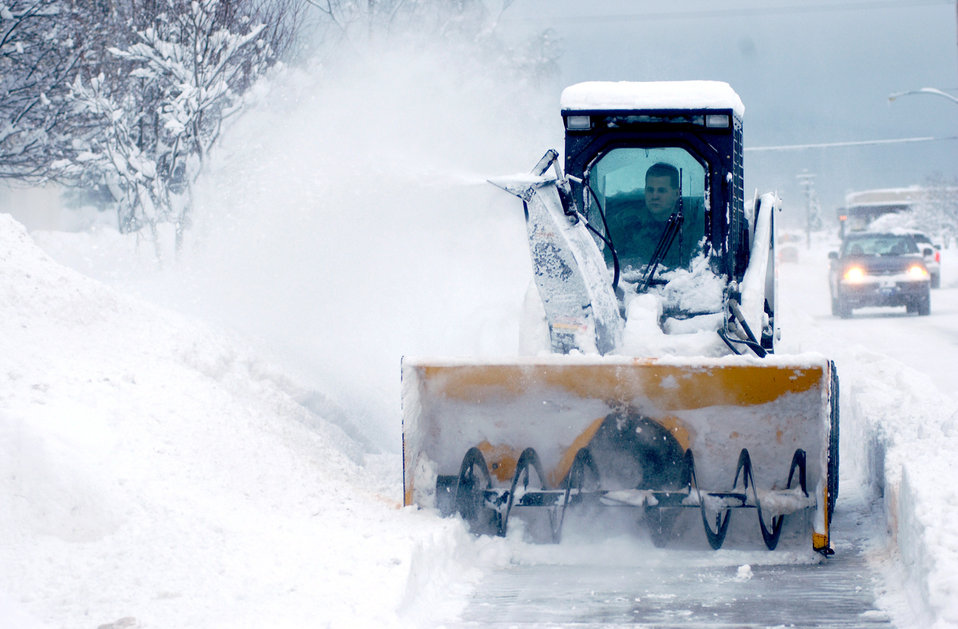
Plowin' in a winter wonderland

ELMENDORF AIR FORCE BASE, Alaska -- Tech. Sgt. Chris Casey gets an introduction to an Alaskan winter as he plows a sidewalk here Dec. 22. Forty-nine inches of snow has already fallen here, more than half the winter average of 77 inches. The snow season runs October through April. Snow removal crews are working around the clock to keep Elmendorf's runways and roadways clear. Casey is assigned to the 611th Air Support Squadron.